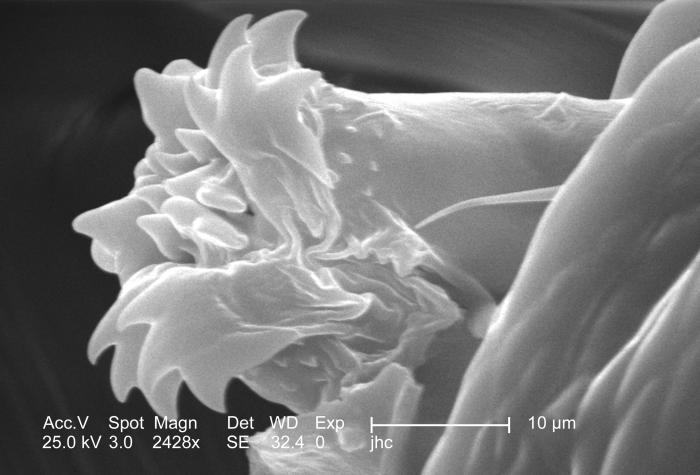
Under a high magnification of 2428x, this 2006 scanning electron micrograph (SEM) depicted an enlarged inferior view of the mouthparts found on the cephalic, or head region of a male body louse, Pediculus humanus var. corporis. The 'floral'-like structure in this field of view represents the labial funnel, or 'haustellum', which is a tube-like structure, formed from what is believed to be a modification of the labium, but is armed with teeth, which act to grab, and hold on to the skin surface of its host while obtaining its blood meal. The insect pierces the host's skin with its sharply-pointed set of three stylets, and together, form what is termed the fascicle, which is hidden from view in this image. Note PHIL# 9214, 9216, in which case a louse is in its feeding mode on the skin surface of its host.